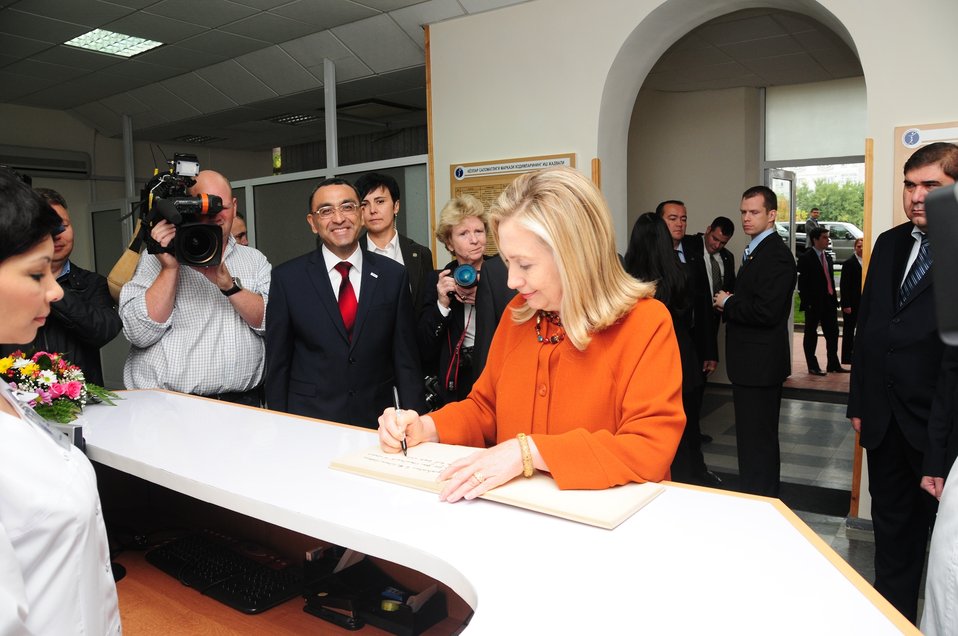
Secretary Clinton Signs the Guestbook

U.S. Secretary of State Hillary Rodham Clinton signs the guestbook at the Women’s Wellness Center in Tashkent, Uzbekistan, on October 23, 2011.